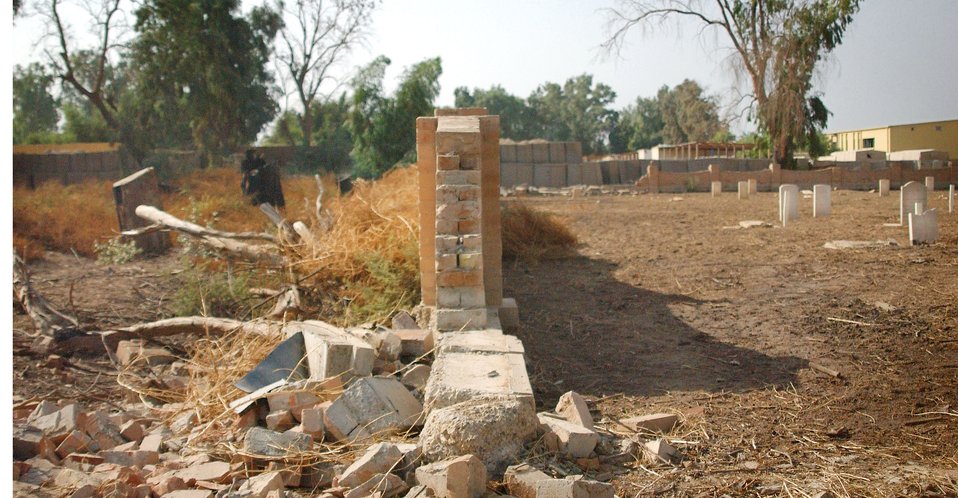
Camp Habbaniyah

To the right of the wall is a British cemetery located at Camp Habbaniyah, Iraq, as it looks today following the clean-up and maintenance efforts of Camp Habbaniyah personnel, including members of the 732nd Regional Support Unit Habbaniyah. To the left is a similar scene of what the volunteers faced when clean-up work began.